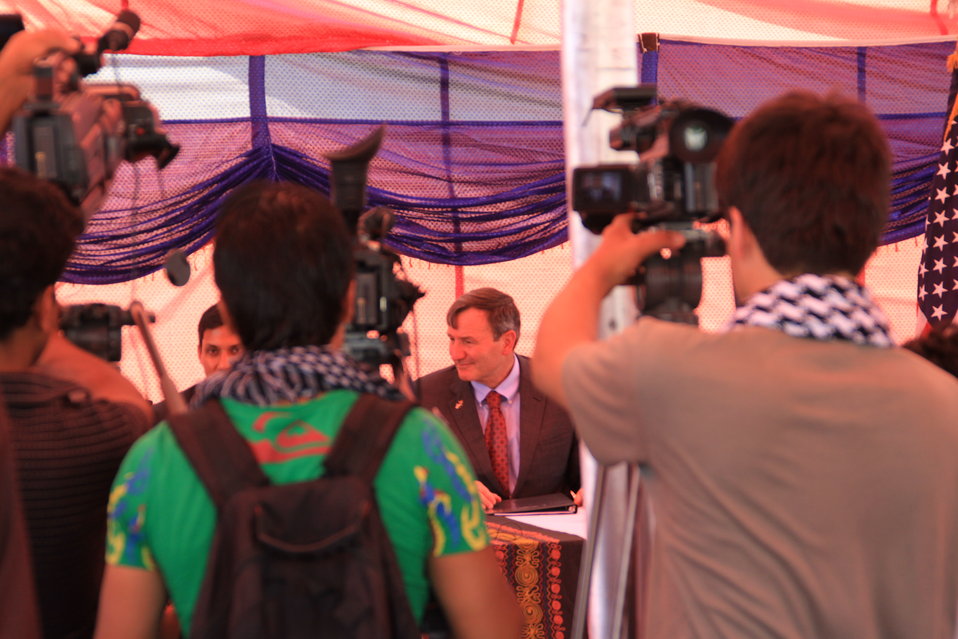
Badam Bagh Farm